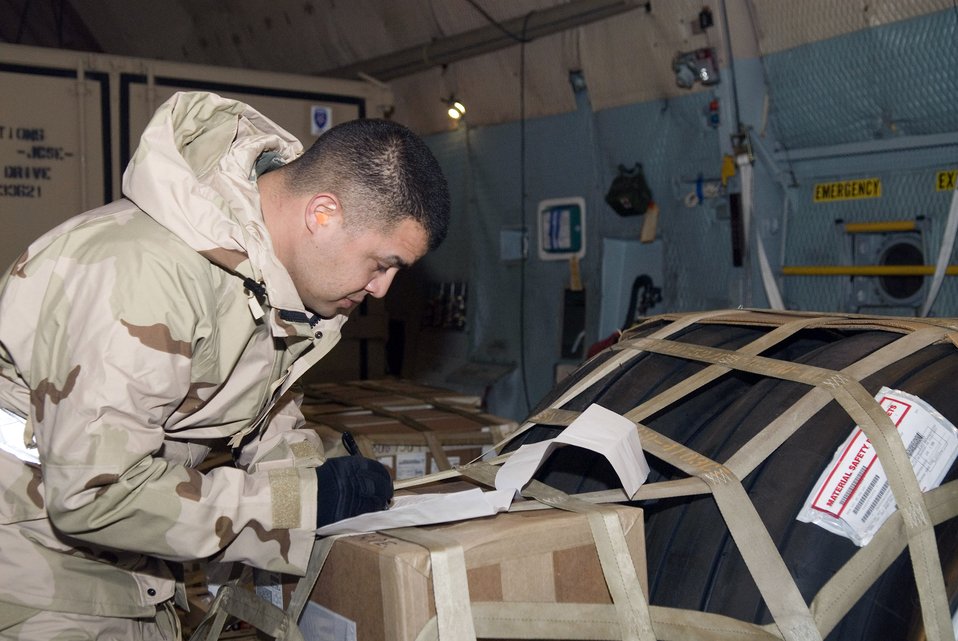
Galaxy quest

Tech. Sgt. Daniel Varley inventories cargo prior to off loaded it from a C-5 Galaxy Jan. 7 at Balad Air Base, Iraq. The inventory is done to ensure the correct cargo pallets are downloaded. Sergeant Varley, a 332nd Expeditionary Logistics Readiness Squadron air transportation specialist, is deployed from Lackland Air Force Base, Texas.